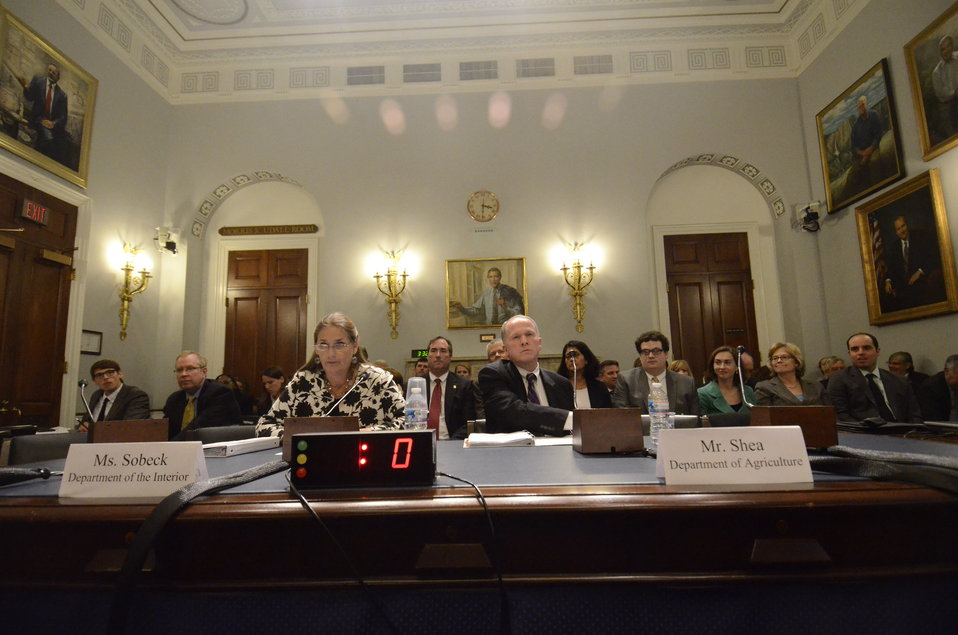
Interior Department Deputy Assistant Secretary for Fish and Wildlife and Parks Eileen Sobeck and Agriculture Department Animal Plant and Health Inspection Service (APHIS) Associate Administrator Dr. Kevin Shea speaking on Retailers & Entertainers Lacey Implementation & Enforcement Fairness Act & Freedom from Over-Criminalization & Unjust Seizures Act at the Longworth House Office Building in Washington, D.C. on Tuesday, May 8, 2012.